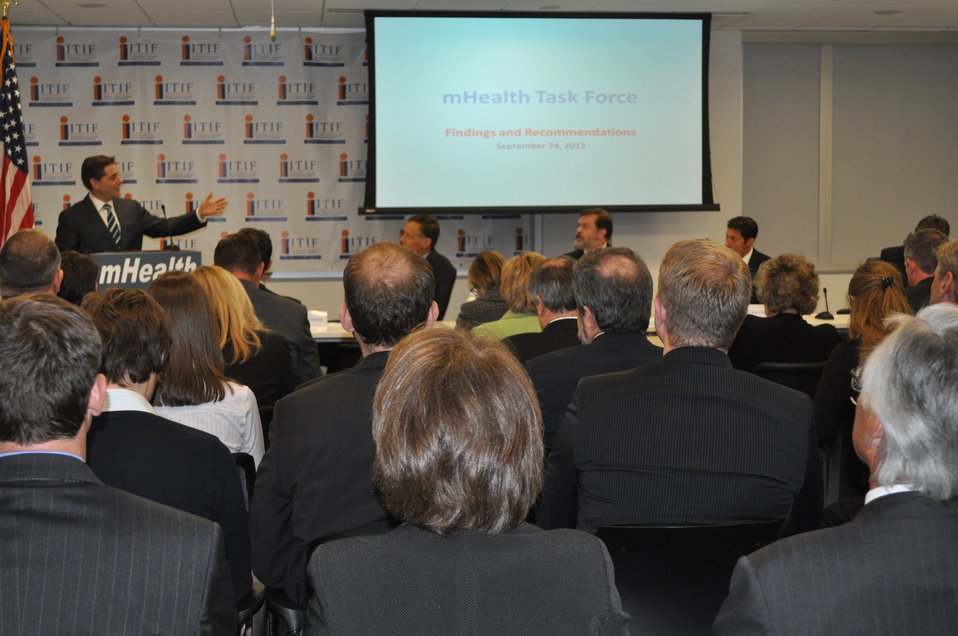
mHealth Task Force Findings and Recommendations Event - DSC 0660